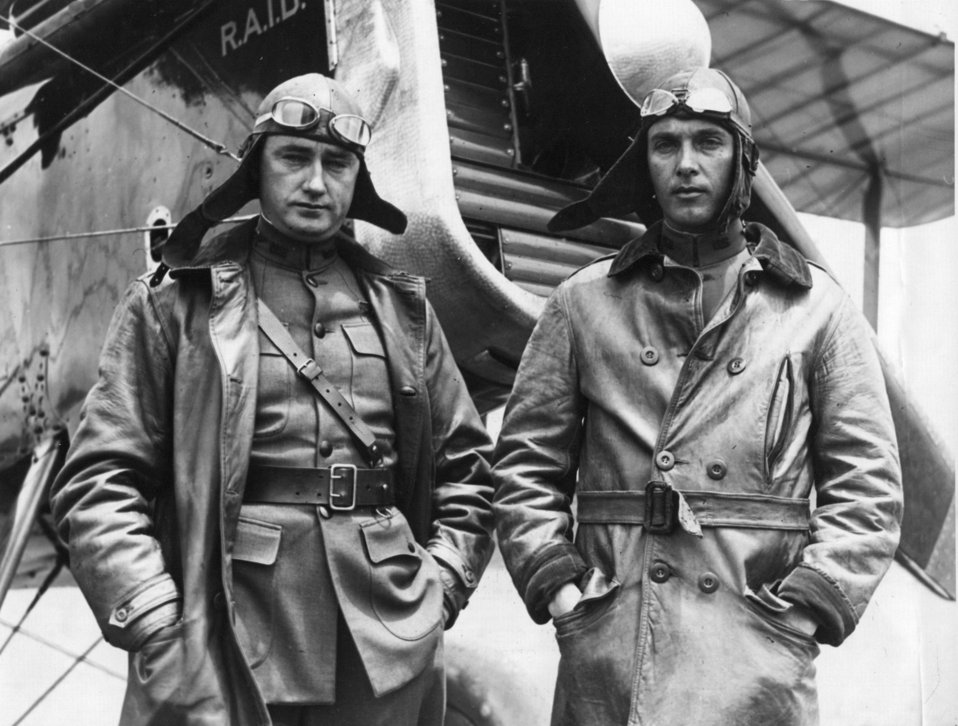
Capt. Lowell Smith and Lt. John P. Richter

EARLY YEARS -- Capt. Lowell Smith and Lt. John P. Richter, made the first mid-air refueling, June 1923, at Rockwell Field.